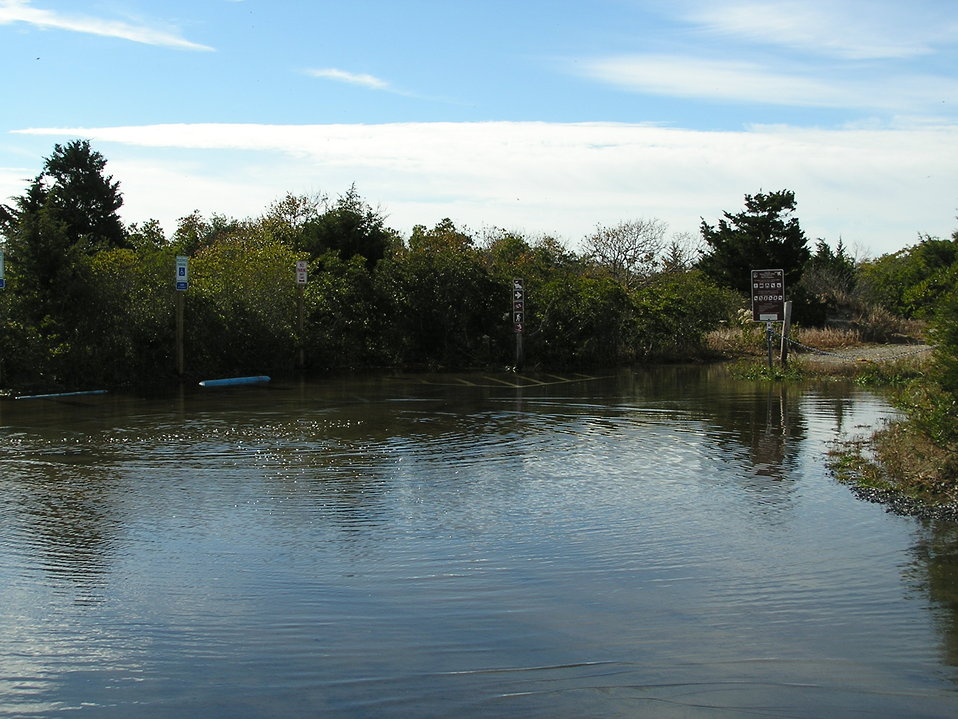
Hurricane Sandy damaged Cape May National Wildlife Refuge (NJ)

Accessible parking lot at Cape May National Wildlife Refuge's Two Mile Beach Unit middle observation platform flooded.